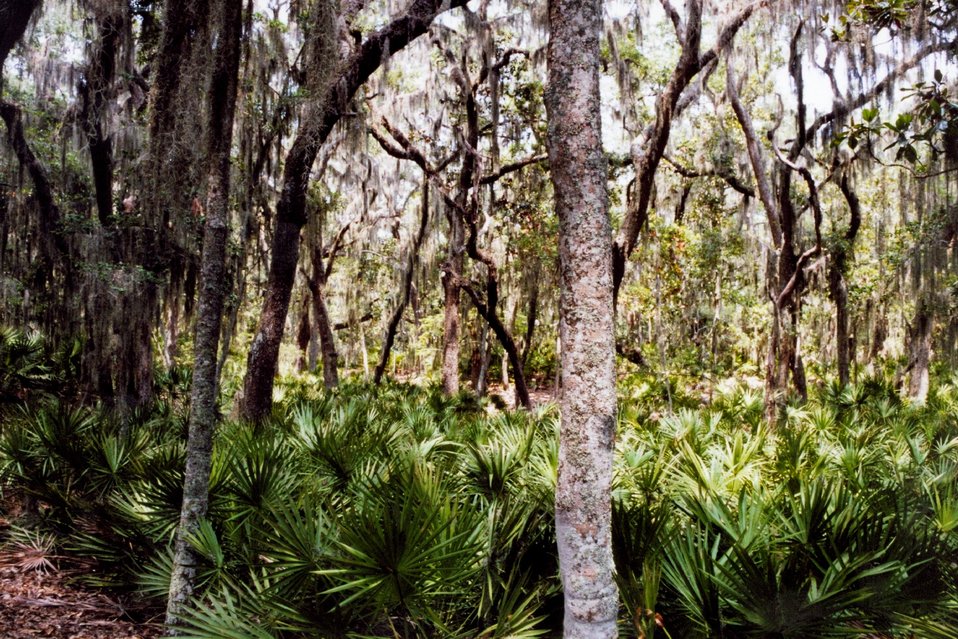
A surreal view of spanish moss covered trees and palmetto ground cover.